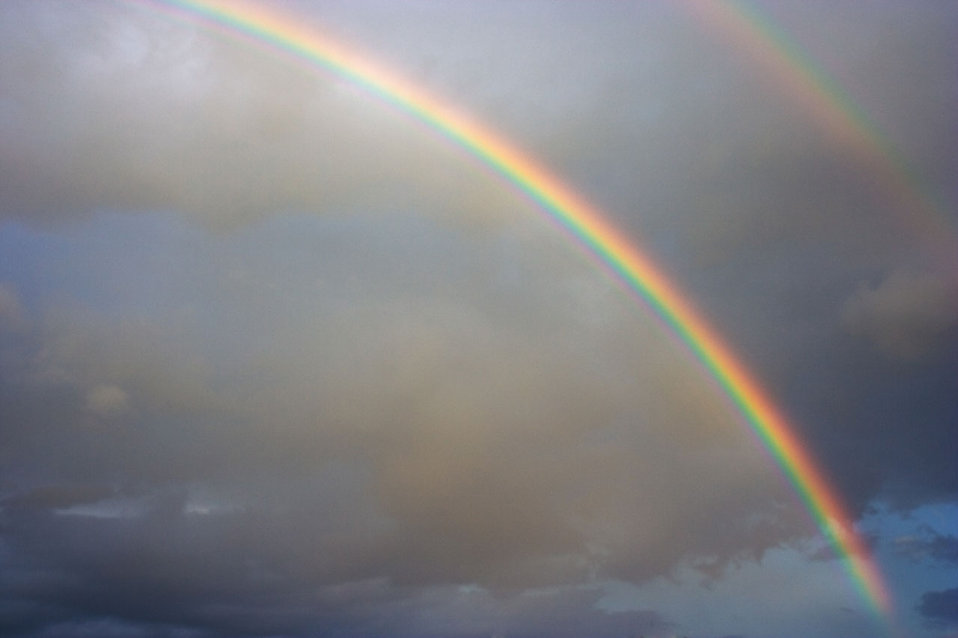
Rainbow

Nice rainbow.